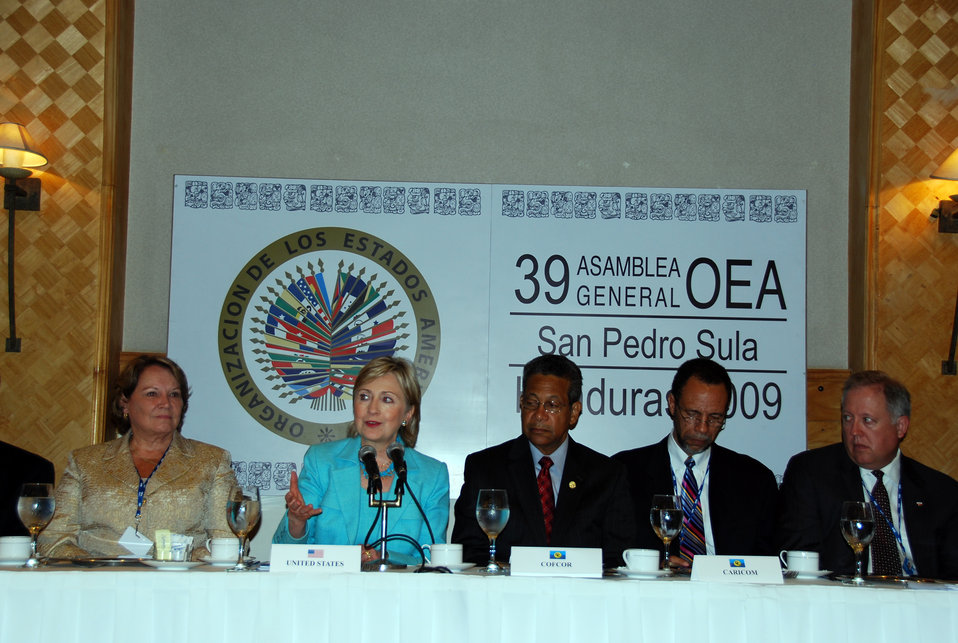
Secretary Clinton Meets With CARICOM Leaders

U.S. Secretary of State Hillary Rodham Clinton during her meeting with CARICOM Foreign Ministers at Club Arabe Hondureno, site of the 39° Organization of American States General Assembly in San Pedro Sula, Honduras, June 2, 2009. From left to right: Professor Dinah L. Shelton, U.S. nominee for the Inter-American Commission on Human Rights (IACHR); Secretary Clinton; Dr. Kenneth Baugh, CARICOM Council for Foreign and Community Relations (COFCOR) Chair and Jamaican Foreign Minister; Ambassador Colin Granderson, CARICOM Assistant Secretary General; and Ambassador Thomas A. Shannon, Assistant Secretary of State for Western Hemisphere Affairs.